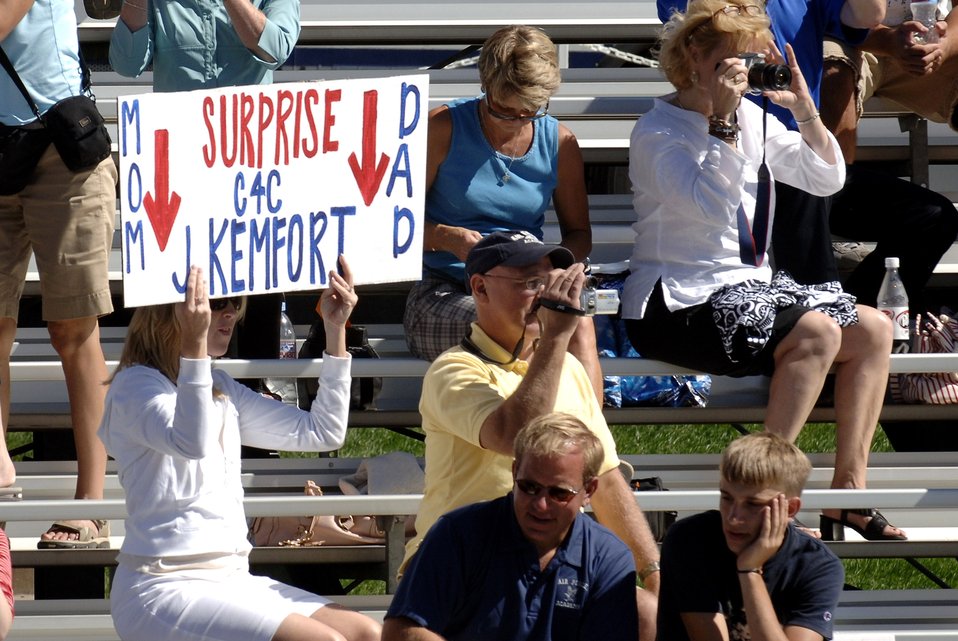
Acceptance Parade for Class of 2011

The parents of U.S. Air Force Academy Cadet 4th Class Jordan Kemfort hold up a sign during the Acceptance Parade Aug. 8 at the Academy in Colorado Springs, Colo. The Acceptance Parade marks the formal acceptance of the new cadets into the cadet wing. The surprise visit allowed C4C Kemfort to spend 2 hours with his family after the parade.